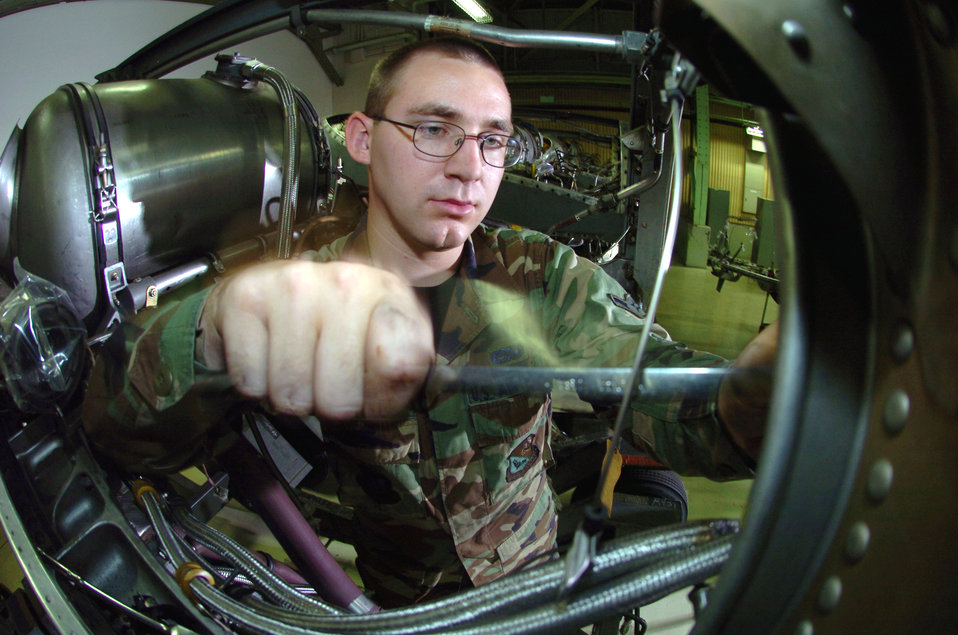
Tightning up

YOKOTA AIR BASE, Japan -- Airman Lonnie Cuttill checks the electrical lines of a C-130 Hercules engine frame. The 374th Maintenance Squadron's T56 engine regional repair center Airmen handle all C-130 cargo aircraft engine repair in Pacific Air Forces.